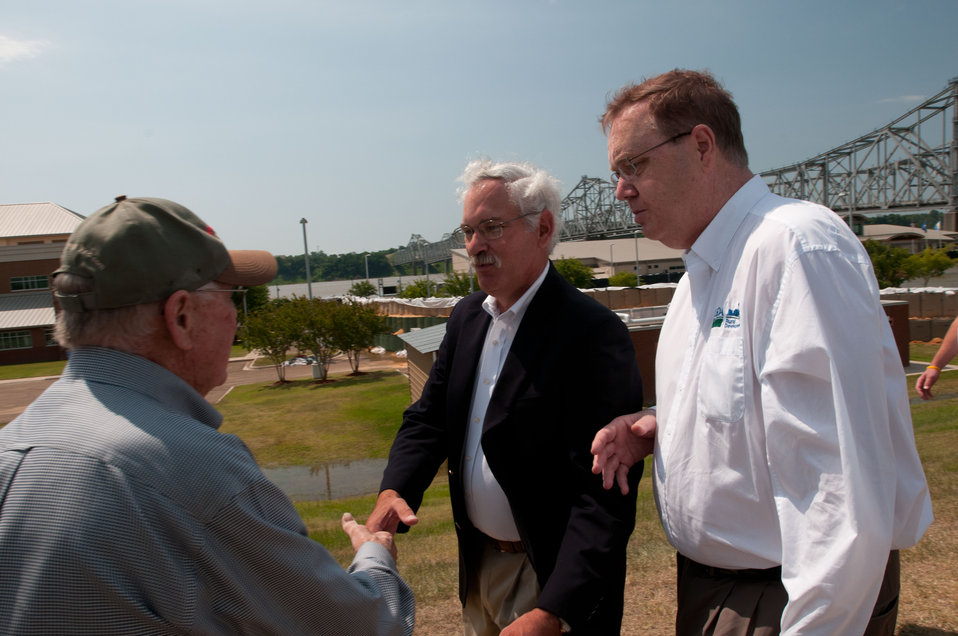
A farmer meets with U.S. Department of Agriculture Undersecretary for Rural Development Dallas Tonsager (right) and Acting Under Secretary Farm and Foreign Agriculture Service Michael Scuse (left) to thank them for coming to see the region and meet with farmers at the Mississippi River levee at Vidalia, LA, on Thursday, May 19, 2011. In the background is the Natchez–Vidalia Bridge which connects Natchez, Mississippi and Vidalia, Louisiana.